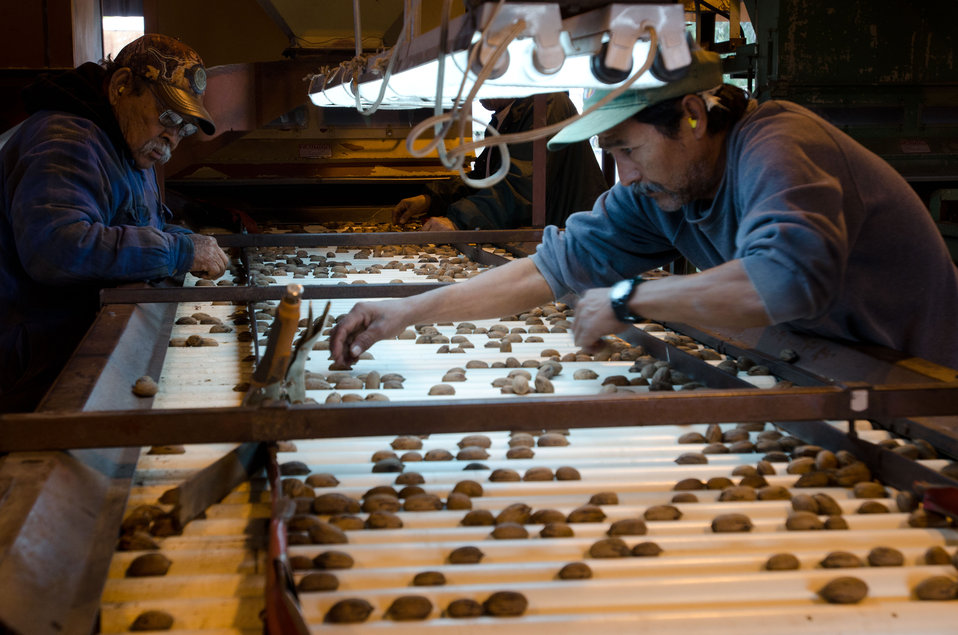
Teodoro Gamez (left) and Jesus Gomez (right) apply their keen eyes and fast hands to sort out any pecans that are less than perfect from the last load of this season's harvest at Arrowhead Farms of Crystal City, TX, on Friday, December 9, 2011, owned by Mr. Akram Mohammad, a pecan farmer since 2005. The 719 acre farm with 10,000 trees, features some orchards with underground micro irrigation system that feeds water to the roots of 4,380 pecan trees on 146 acres. Mr. Mohammad said, “USDA (U.S. Department of Agriculture) was essential to my business and trees surviving the recent exceptional drought. The trees were stress free thanks to underground micro-irrigation. This is essential to the future growth of Texas agriculture and good for America.” U.S. Department of Agriculture’s (USDA) Environmental Quality Initiative Program (EQIP) awarded Mr. Mohammad a $130,000 grant in 2008. He provided $26,000 for the balance of the $156,000 total cost to install a 146-acre underground micro-irrigation for 4,380 trees.